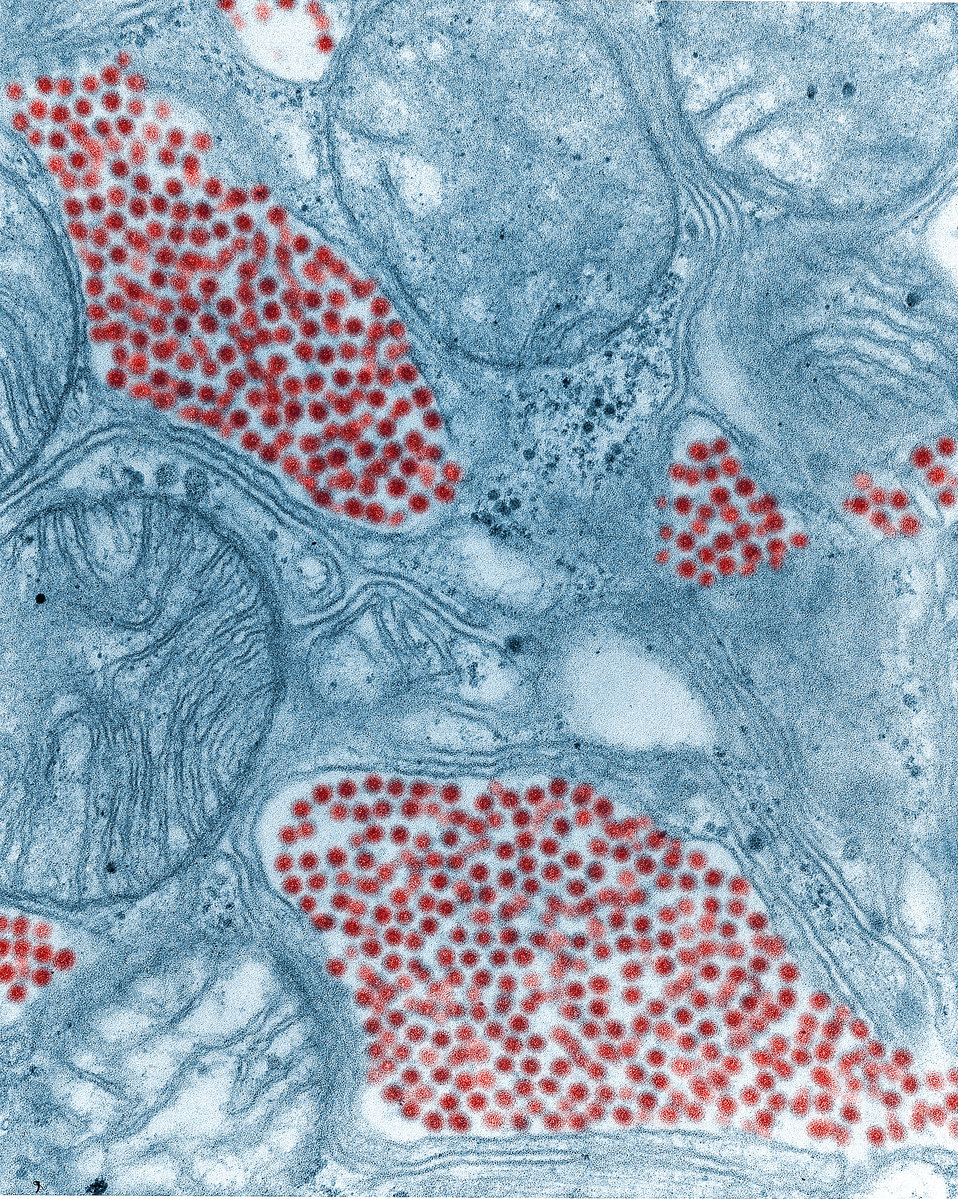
This colorized transmission electron micrograph (TEM) depicts a salivary gland that had been extracted from a mosquito, which was infected by the Eastern equine encephalitis (EEE) virus, which has been colorized red; magnified 83,900x.